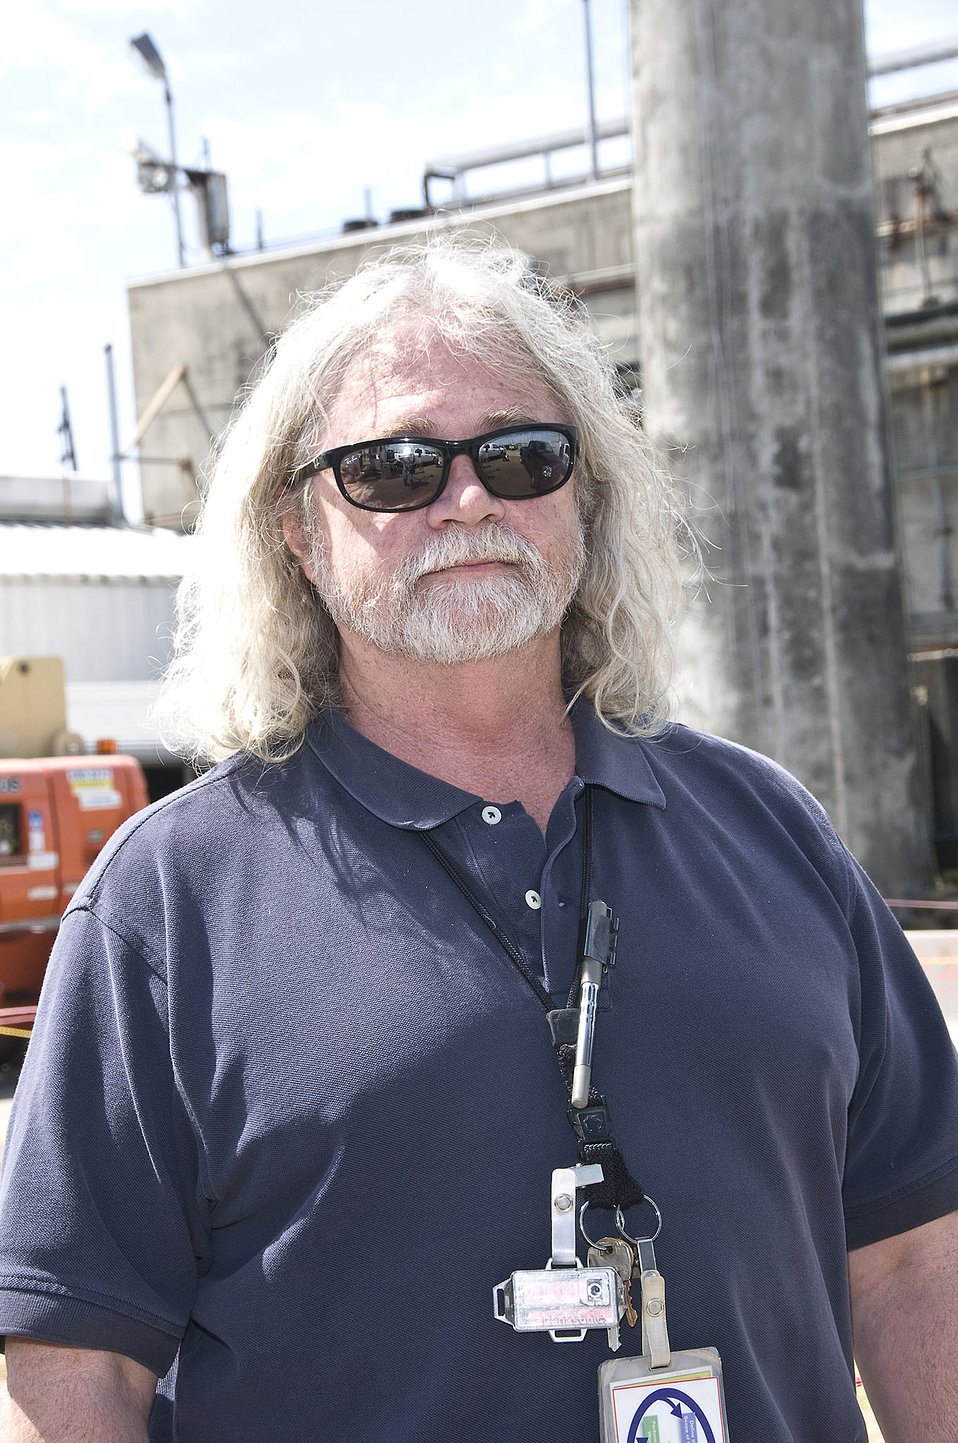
Safety and Training Key to Stack Reduction Demolition

Dell Simpson, SRNS deputy director, Area Decontamination & Decommissioning, stresses safety and training as part of the stack reduction project.